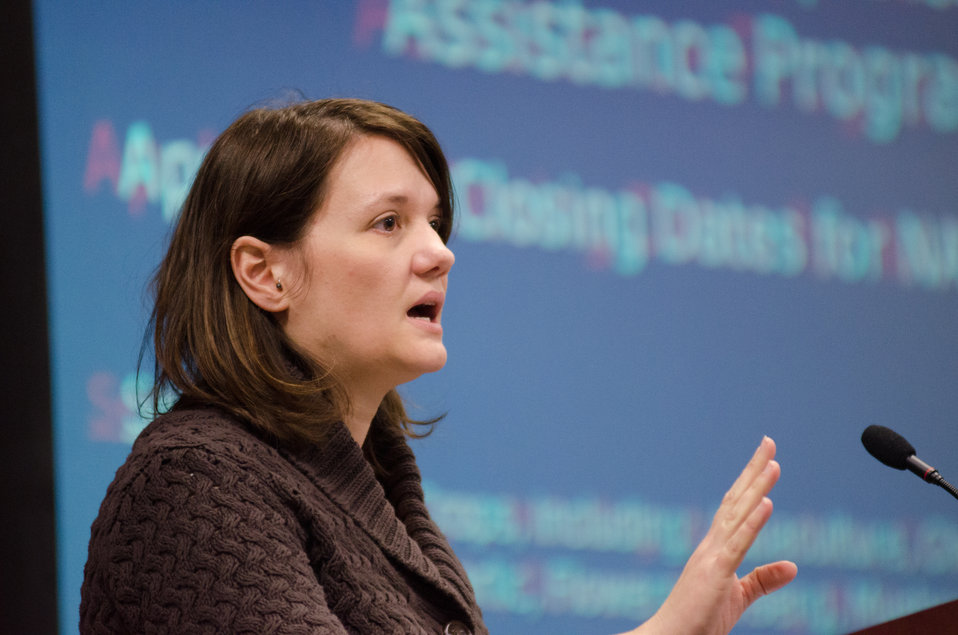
U.S. Department of Agriculture (USDA) Farm Service Agency (FSA) agriculture program specialist Allison Wash speaks to farmers about Noninsured Crop Disaster Assistance Program and other crop disaster related topics, at the “Virginia State University (VSU), USDA and Virginia Farmers Working Together” outreach workshop at the VSU, L. Douglas Wilder building on Thursday, Mar. 7, 2013, in Petersburg, VA. Farmers shared and learned new ways to do more with USDA services, and how to apply for programs that will help grow their business.